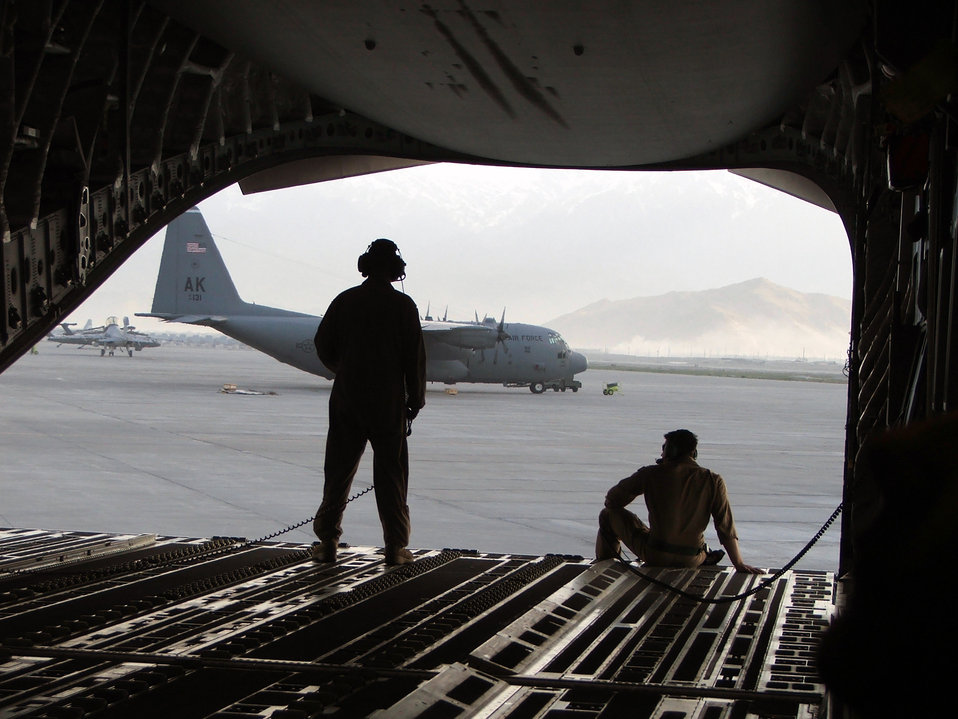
Peaceful view

BARGRAM AIR BASE, Afganistan -- Senior Airmen Heath Burns, left, and Thomas Elsworth survey the airfield here after their C-17 Globemaster III taxis to a stop here April 4. They are C-17 loadmasters from Charleston Air Force Base, S.C.